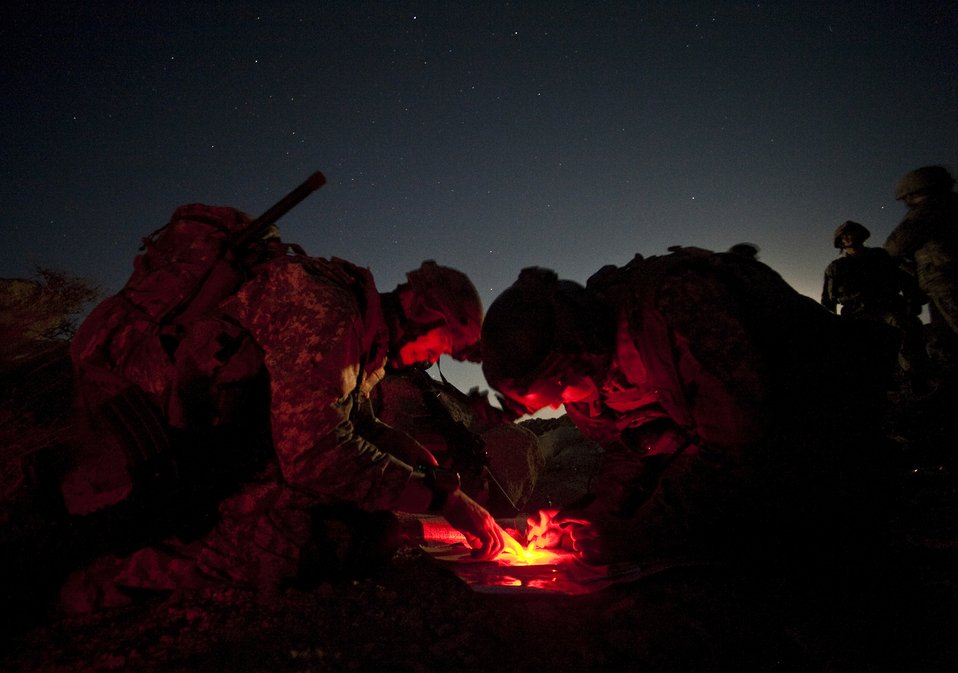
Late Night Call

Tech. Sgt. Donald Urqhart and Airman 1st Class Michael Pincheira look over a grid map before calling in a simulated airstrike Aug. 14, 2011, at the National Training Center at Fort Irwin, Calif., during a Green Flag-West 11-9 training exercise. Urqhart and Pincheira are joint terminal attack controllers assigned to the 5th Air Support Operations Squadron at Fort Lewis, Wash.